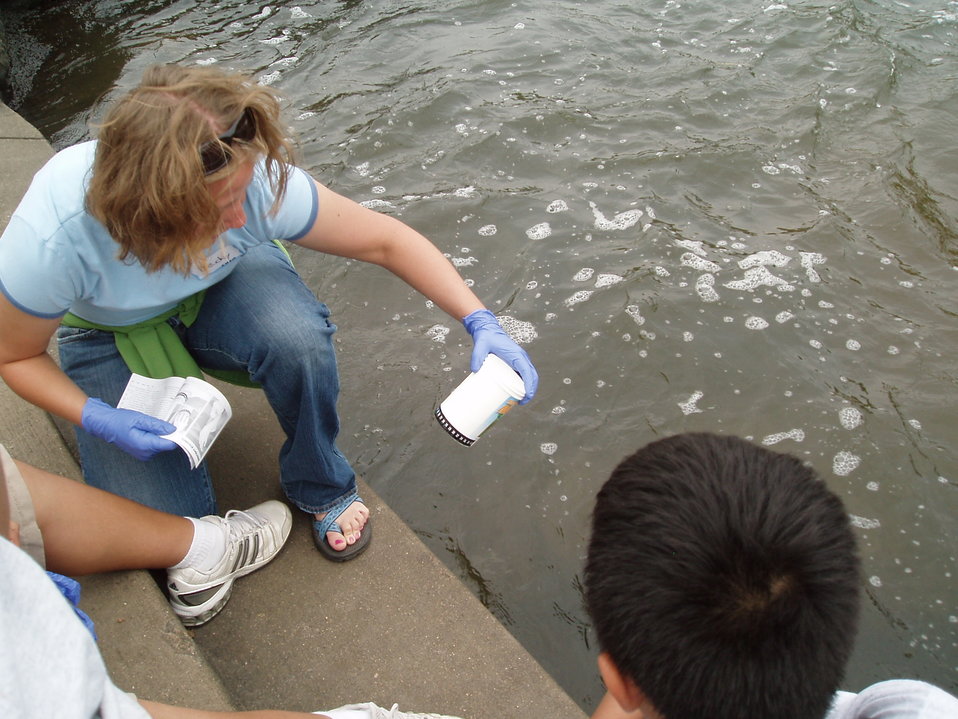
Students Testing Water on World Water Monitoring Day

Students learned how to test water for temperature, oxygen, pH and turbidity. Temperature is important—it affects the amount of dissolved oxygen in the water. pH measures how acidic or basic the water is. Turbidity measures how clear the water is. Students used the official World Water Monitoring Test Kit provided to sample the river.

To find out more about the WWMD test kit visit: www.worldwatermonitoringday.org/Test Kits/Kits Main.html